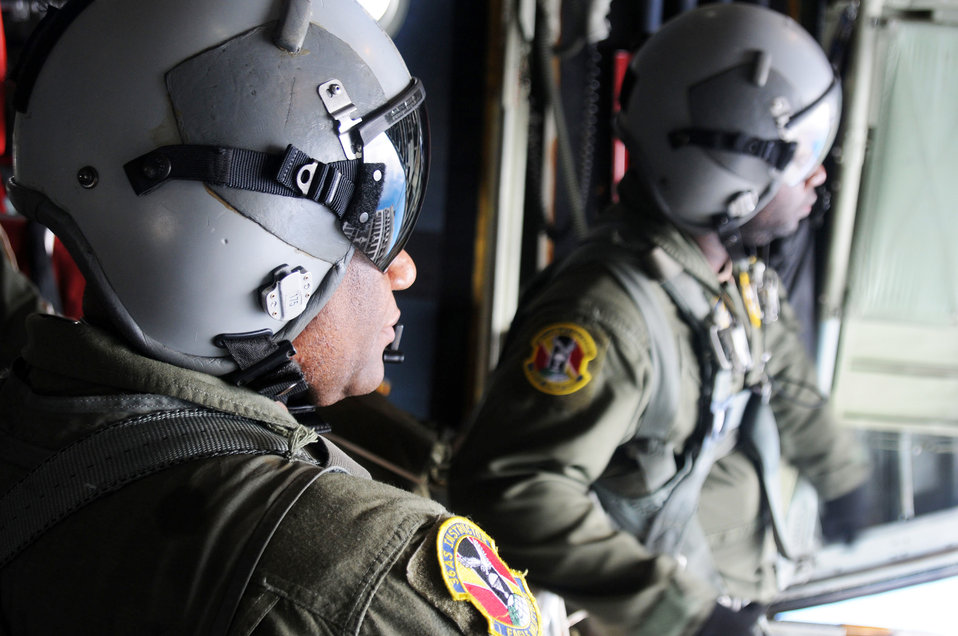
Keeping an eye out

Master Sgt. Anthony Pemberton and Tech. Sgt. Jerron Ashley, 36th Airlift Squadron loadmasters from Yokota Air Base, Japan, prepare to airdrop a box of donated goods in support of Operation Christmas Drop Dec. 17, 2009. Operation Christmas Drop is a non-profit organization sponsored by people at Andersen Air Force Base and the local Guam community. Each year, the two join forces to aid more than 30,000 islanders.